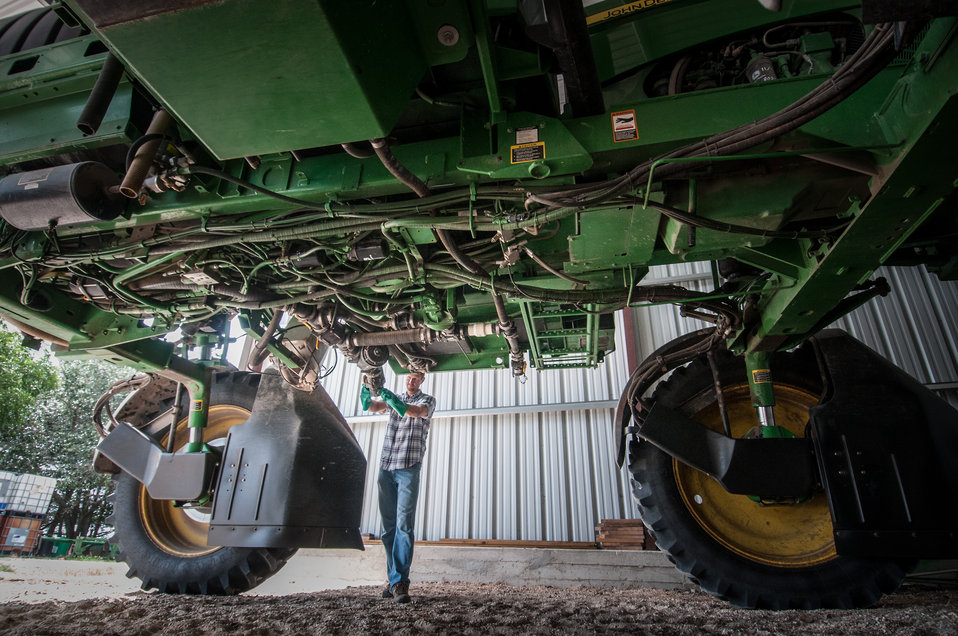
Michael Popp performs mechanical checks on farm equipment used for tilling, planting, spraying and harvesting cotton and milo (a.k.a. grain sorghum) grown at Popp Farms 05, a farming family that spans five generations and is now based in El Campo, Texas, on June 20, 2013. The farms’ 2,400 acres are about an hour drive southwest from Houston. Michael chose farming after graduating from Texas A&M with a degree in Agriculture Economics and a Masters degree in Finance. The farm is a member of the United Agricultural Cooperative, Inc.